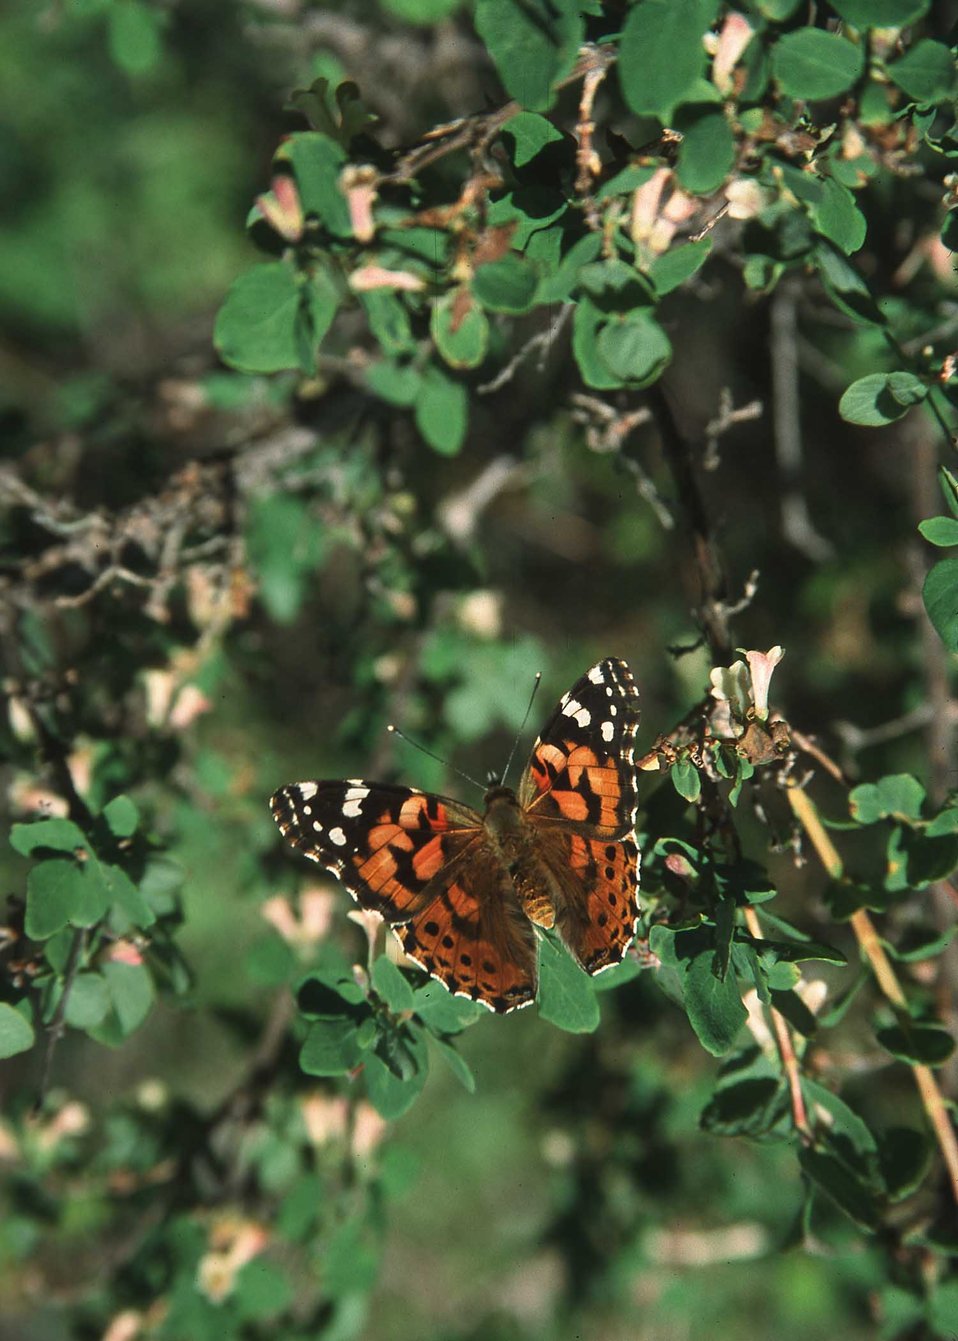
Painted Lady butterfly.